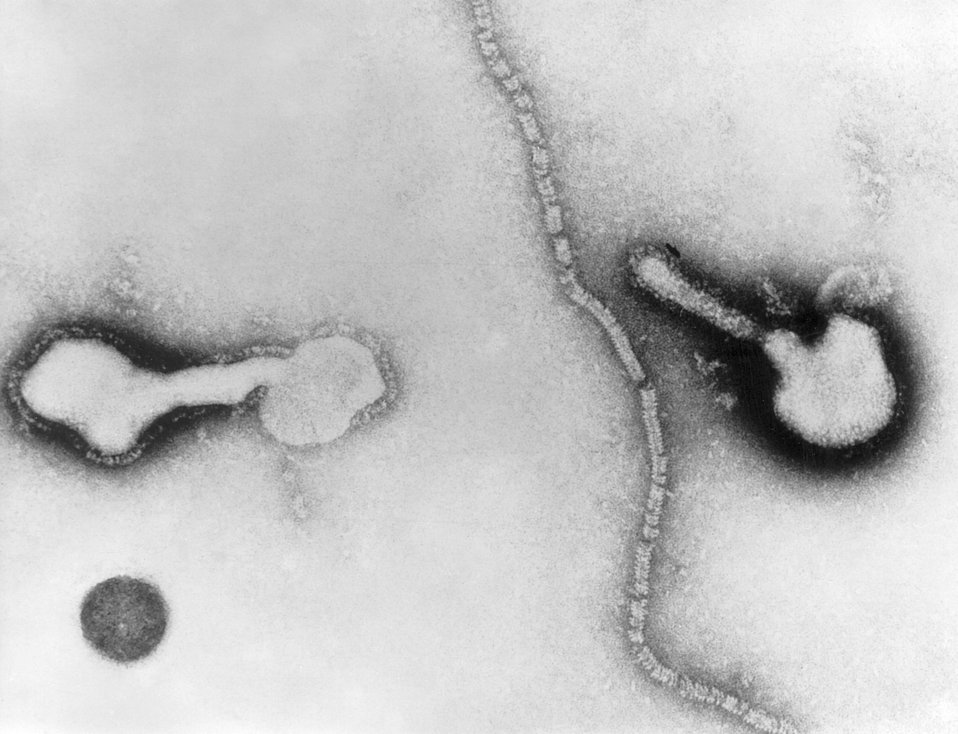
This transmission electron micrograph (TEM) depicts two intact parainfluenza virions, and free filamentous nucleocapsid material.